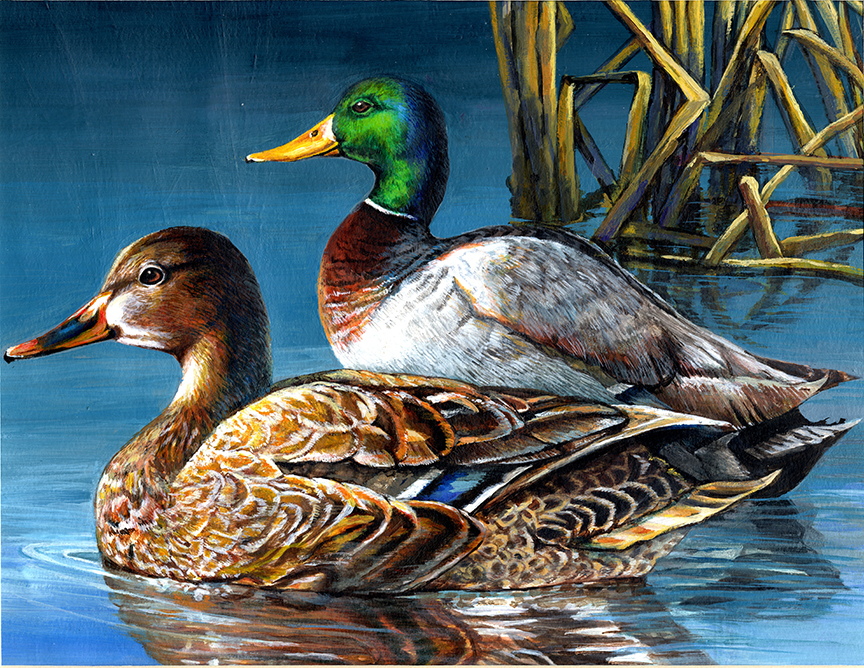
JRDuck2013GA

2013 Junior Duck Stamp Best of Show-Georgia